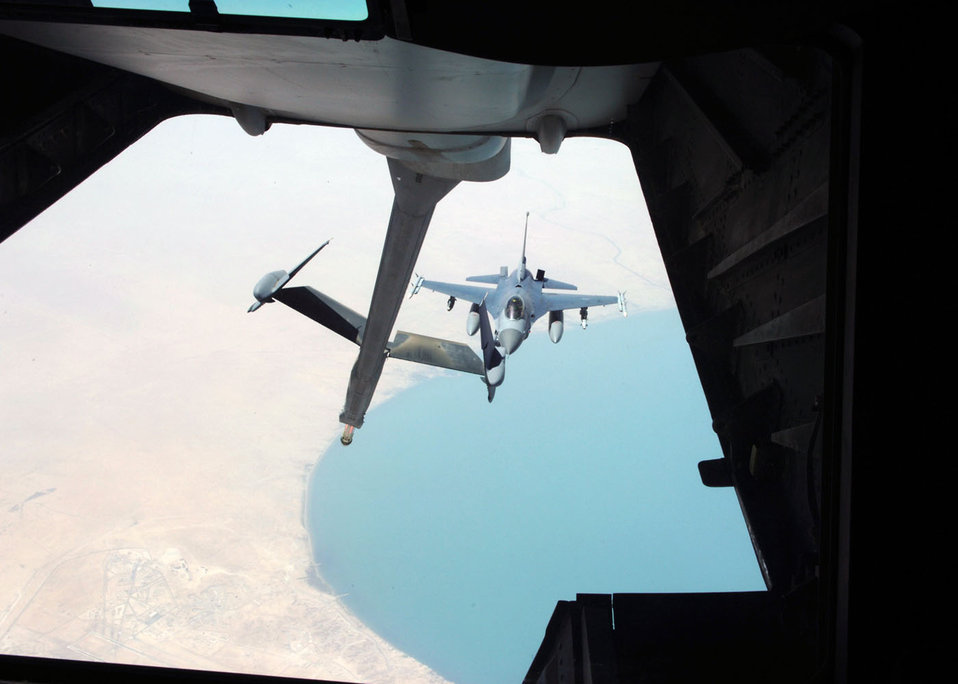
Airpower Summary for Aug. 23, 2007

An F-16 Fighting Falcon eases up to the refueling boom of a KC-10 Extender during an Operation Iraqi Freedom mission. F-16s provide shows of force to enemy troops and provide overwatch for coalition troops on the ground in Iraq.